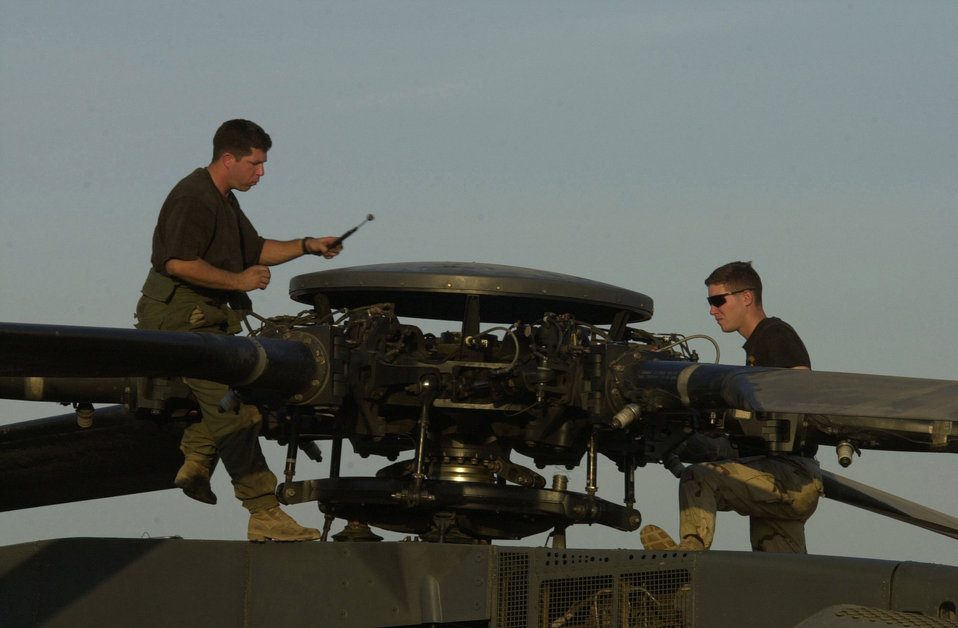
Rotor maintenance

OPERATION ENDURING FREEDOM -- Airmen from the 16th Special Operations wing at Hurlburt Field, Fla., perform maintenance on the rotor assembly of a MH-53J Pave Low III helicopter at an Operation Enduring Freedom location. The MH-53 is the largest, most powerful and technologically advanced helicopter in the Air Force inventory.